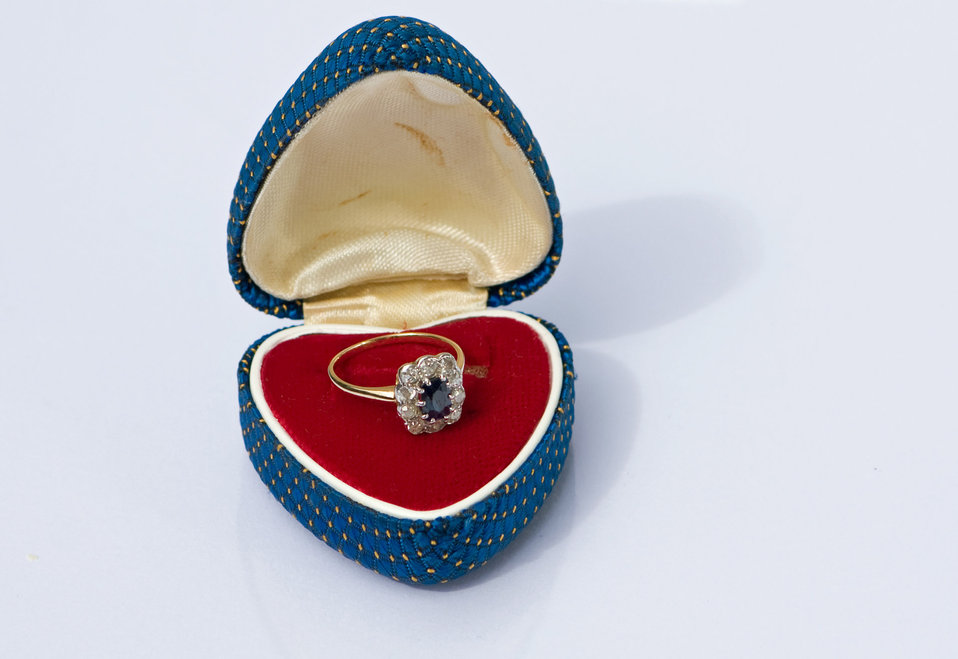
Antique engagement ring

Vintage sapphire and diamond engagement ring in presentation box.